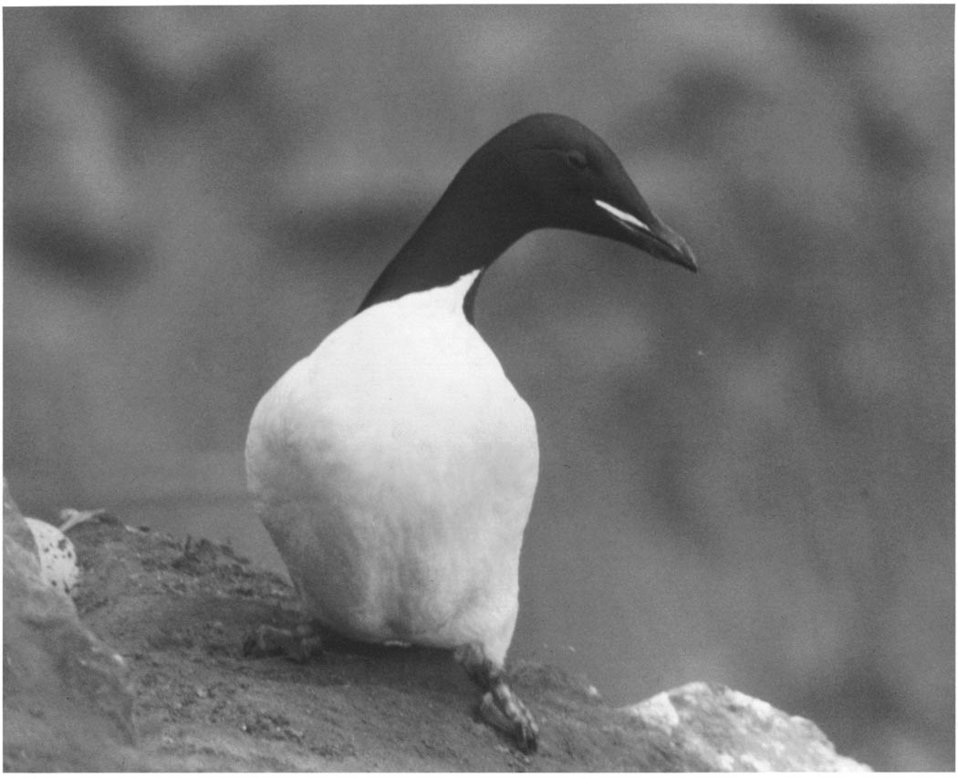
Aleutian Thick-Billed Murre.